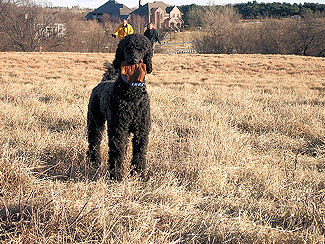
Valentine's Yukon King, owned by Steve Soberski, Photo taken January 2007 in a field in southeast Lincoln, Nebraska by Kimberly Olivera.